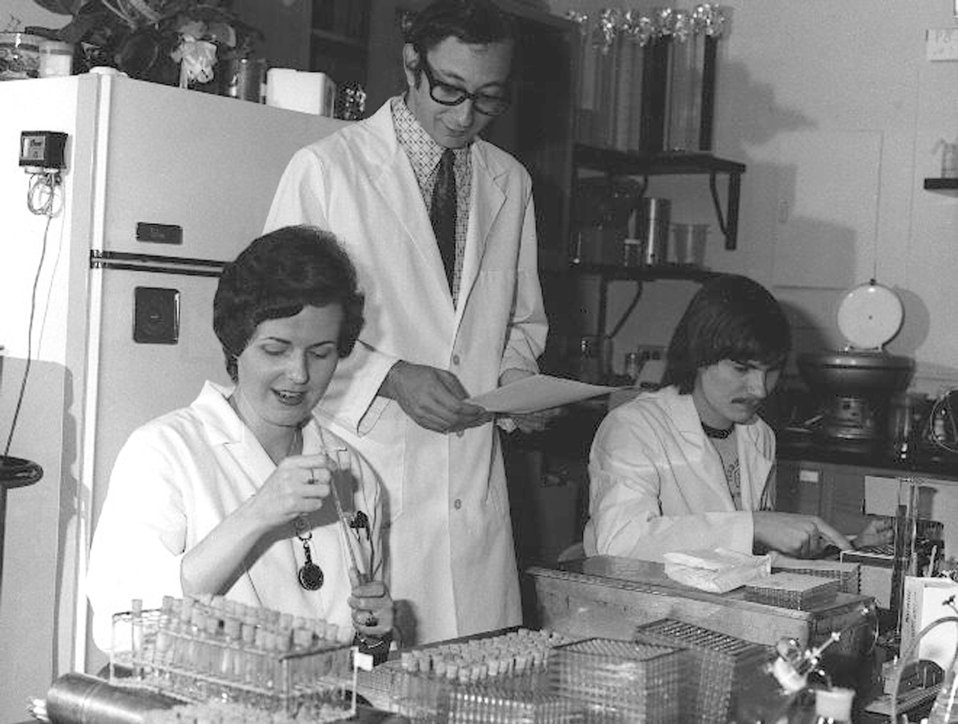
CDC Laboratorians.